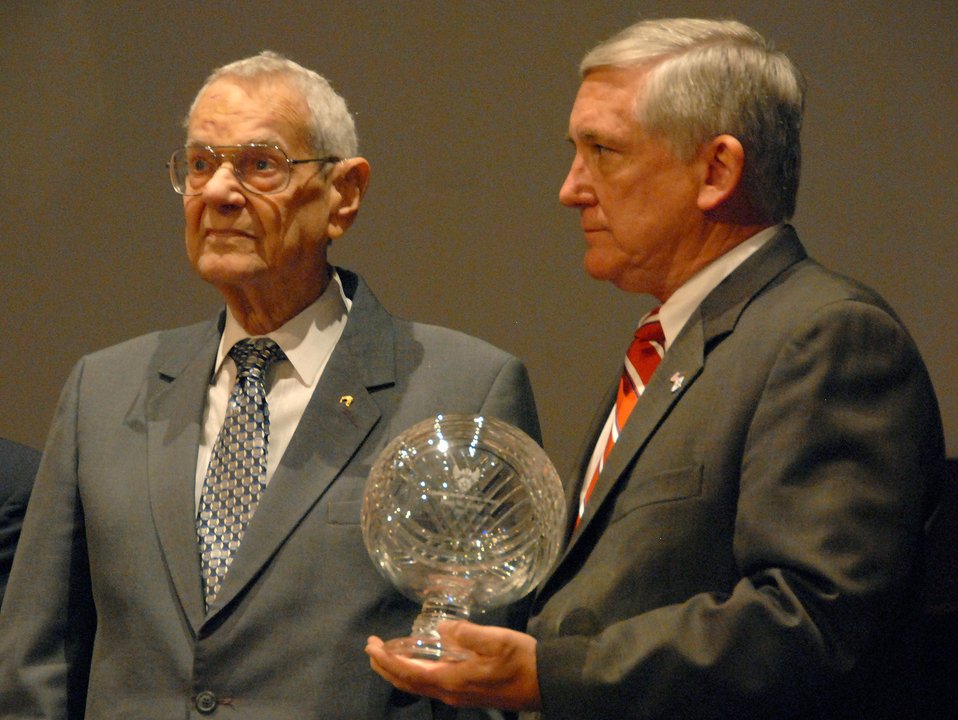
First CMSAF earns Lifetime Achievement Award

Retired Chief Master Sgt. of the Air Force Paul Wesley Airey receives the Air Force Association's Lifetime Achievement award from AFA's Chairman of the Board Robert Largent during a Nov. 20 ceremony at Maxwell-Gunter's Senior NCO Academy in Alabama. Chief Airey was the first chief master sergeant of the Air Force, and is the first enlisted member to receive the AFA award.